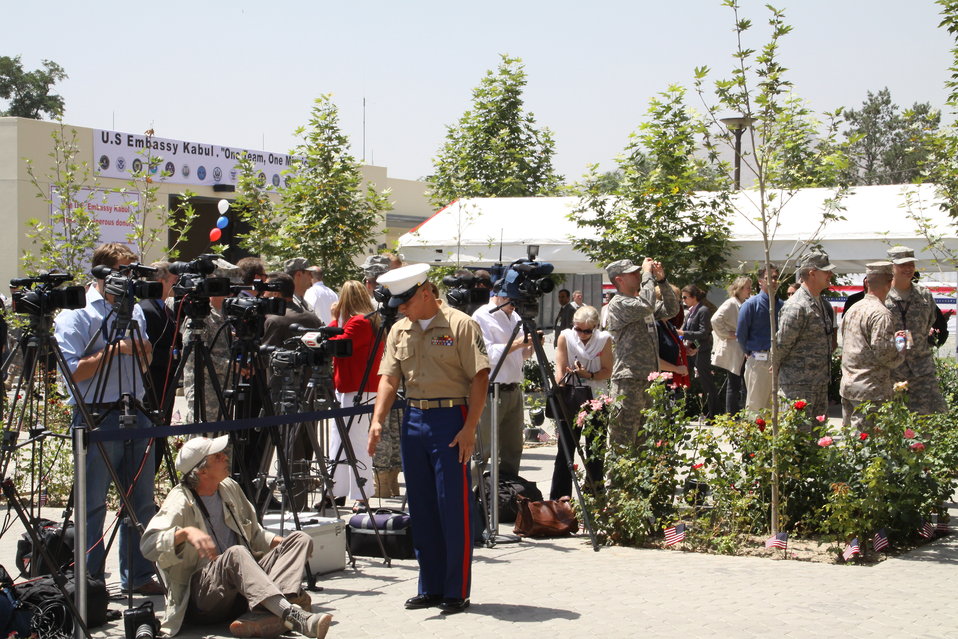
Kabul Official July 4th Celebration